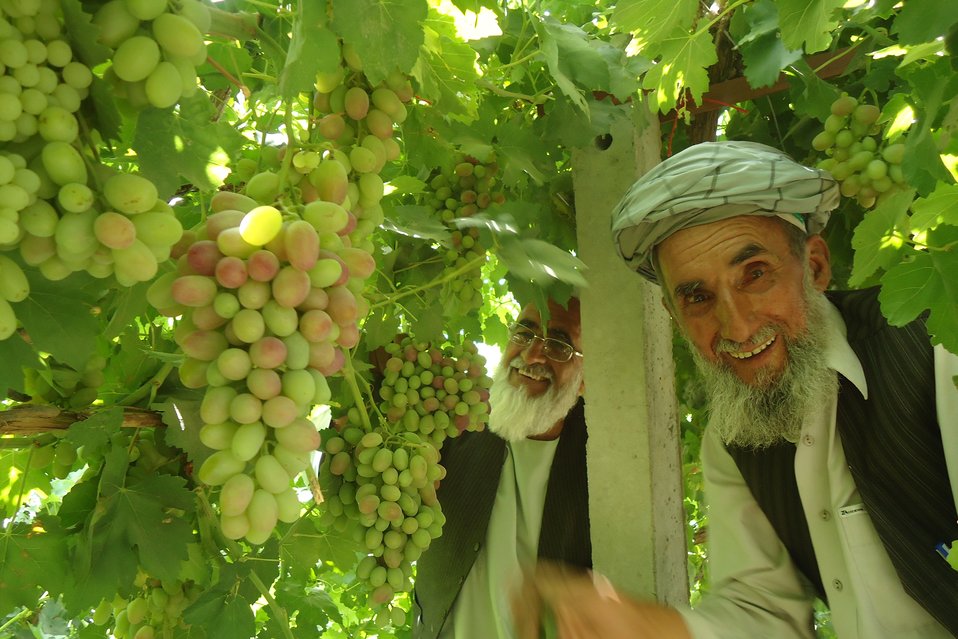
Grapes

Over 22 varieties of grapes were planted on the Ministry of Agriculture’s research farm to establish a grape foundation nursery. USAID-funded projects introduced trellising, a practice that increases the quality of grapes and overall yields.